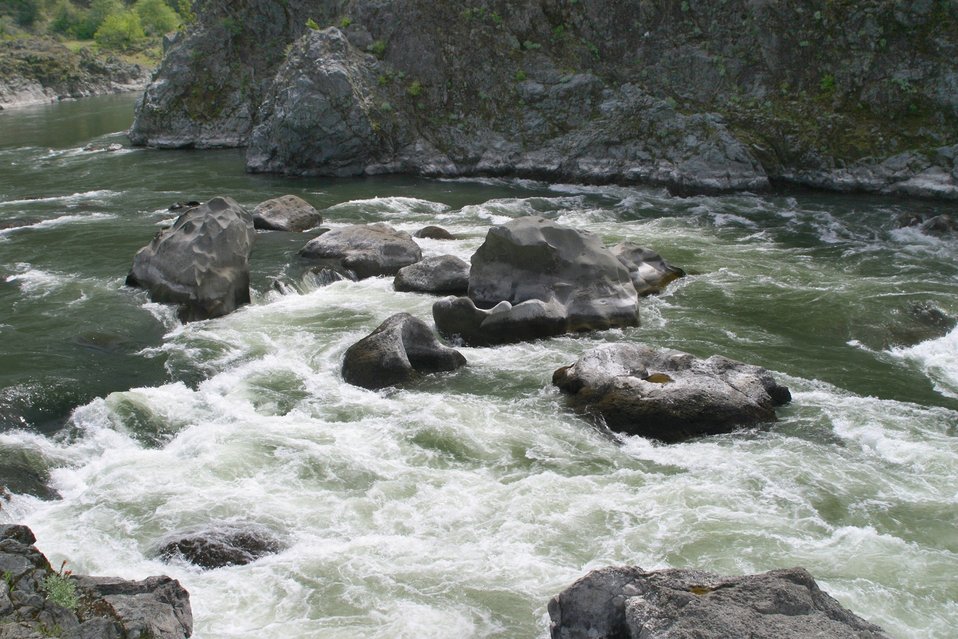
Wild section of the Rogue River from Grave Creek to Foster Bar May 19 to May 22.